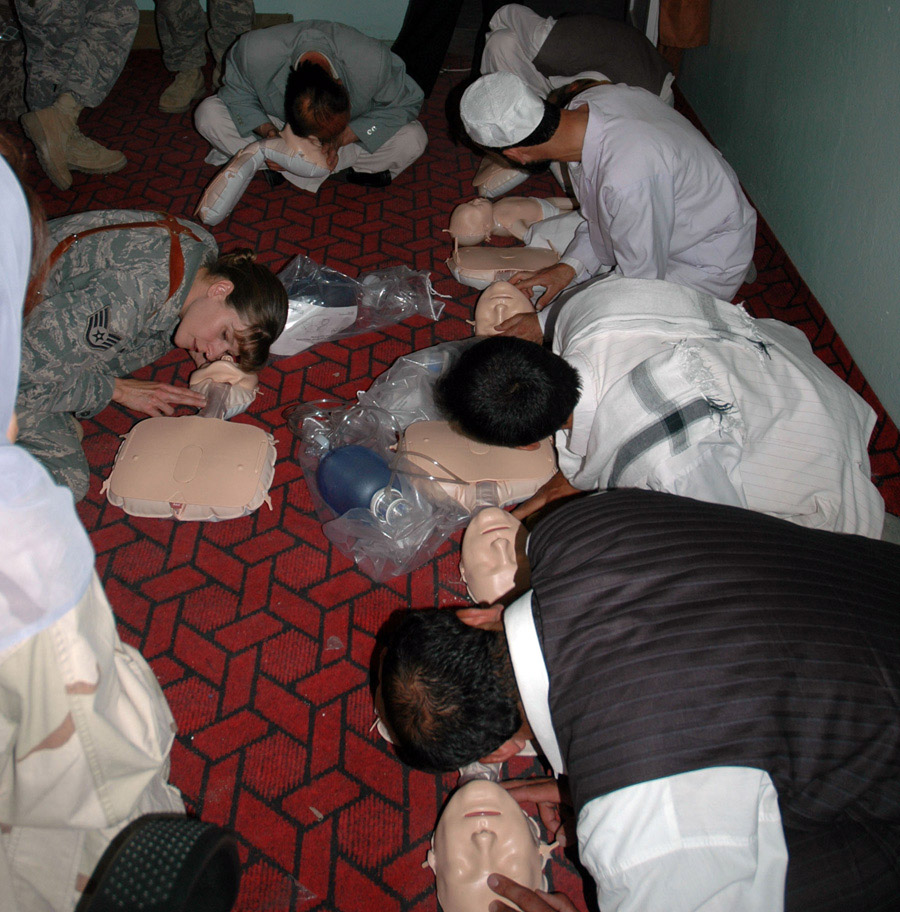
Servicemembers teach CPR to Afghan medical providers

Staff Sgt. Janine Duschka teaches the jaw thrust maneuver to Afghan medical providers during a CPR class June 18 at the Rokha Clinic in the Panjshir Province in Afghanistan. This was the first session of a 15-class CPR program that the Panjshir PRT is providing this year. Sergeant Duschka is a Panjshir Provincial Reconstruction Team medical technician.